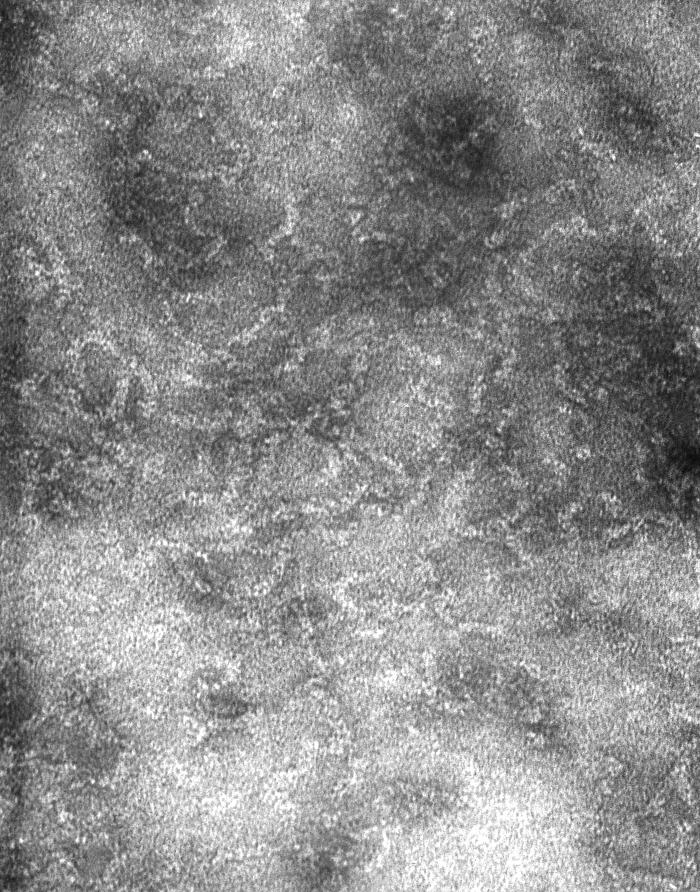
This negatively-stained transmission electron micrograph (TEM) revealed the presence of La Crosse (LAC) encephalitis virus ribonucleoprotein particles (RNP). LAC virus is a member of the Bunyaviridae virus family, California serogroup. This is an arbovorus, which means that transmission occurs through the bite of an infected arthropod, which in this case, is the treehole mosquito, Aedes triseriatus. LAC can also be transmitted through the bite of infected vertebrates including chipmunks and squirrels.